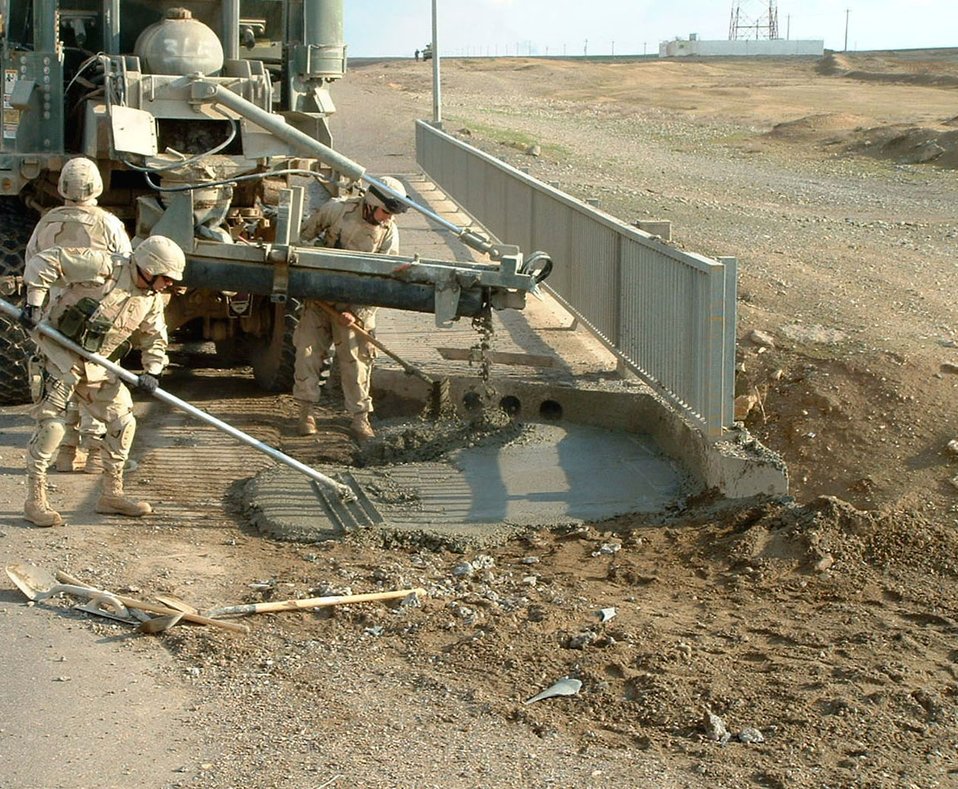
Civil Engineers help rebuild Iraq

Senior Airmen Adam Chavera and Jason Brashar and Master Sgt. Kirk Kessler pour concrete into a crater on the edge of a bridge from the mobile concrete batch plant. The Airmen, with Detachment 10 of the 732nd Expeditionary Civil Engineer Squadron, were on their first crater repair mission.